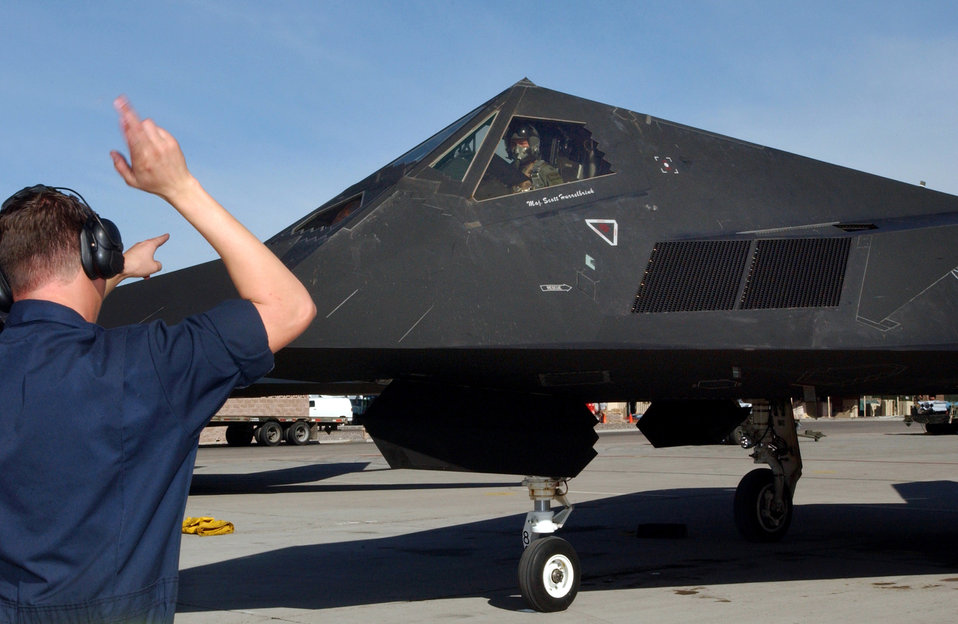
Nighthawk at Red Flag

NELLIS AIR FORCE BASE, Nev. (AFPN) -- Senior Airman Colin Webb marshalls out an F-117A Nighthawk, piloted by Capt. Erik Jacobson, during Red Flag 06-1, here Jan. 21 to Feb. 18. Red Flag is an exercise that tests aircrews' warfighting skills. Flights involve more than 100 aircraft, including B-52 Stratofortresses and F-16 Fighting Falcons. The aircraft are flying missions day and night to the nearby Nevada Test and Training Range where they simulate an air war. Along with the Air Force, units from the Army, Navy, NATO and several allied countries are participating. Captain Jacobson is an F-117A Nighthawk pilot with the 49th Fighter Squadron at Holloman Air Force Base, N.M. Airman Webb is a crew chief with the 49th Aircraft Maintenance Squadron.